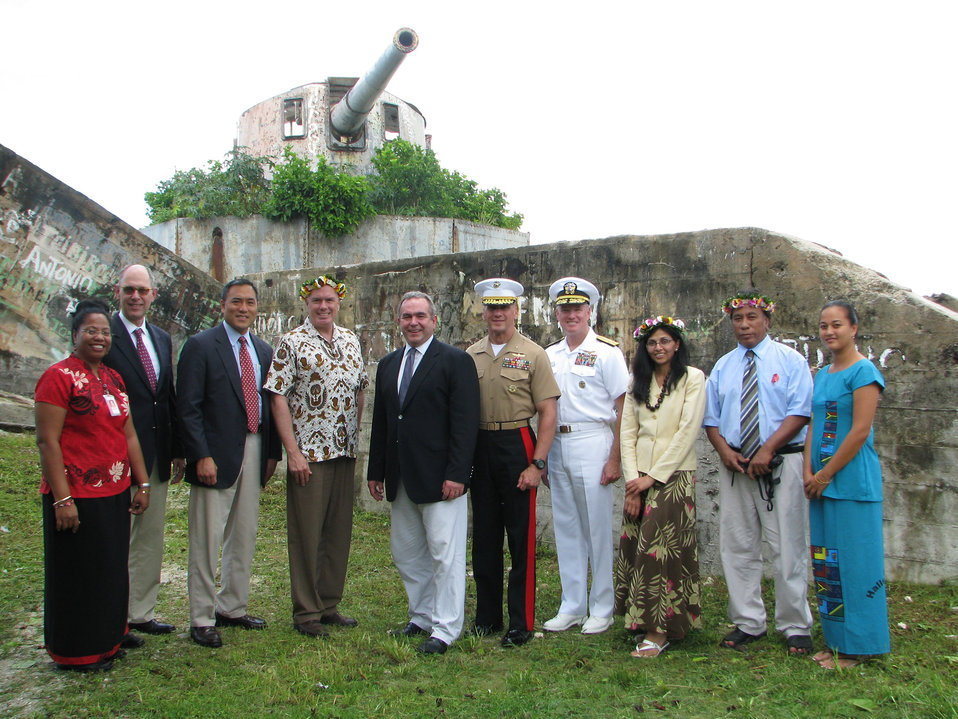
Assistant Secretary Campbell, Kiribati Foreign Secretary Lambourne, and Other Officials Pose for a Photo at the Vickers 8” Guns

Assistant Secretary for East Asian and Pacific Affairs Kurt Campbell, center, poses for a photo at the Vickers 8' coastal guns with Kiribati Foreign Secretary Tessie Lambourne, left, other local officials, and a delegation he is leading on a visit of South Pacific nations in Kiribati on June 27, 2011. The delegation includes U.S. Navy Adm. Patrick Walsh, commander of U.S. Pacific Fleet, Office of the Secretary of Defense South/Southeast Asia Principal Director, Marine Corps Brig. Gen. Richard Simcock, and U.S. Agency for International Development (USAID) Assistant Administrator Nisha Biswal, third from right. To Assistant Secretary Campbell's right is U.S. Embassy Deputy Chief of Mission Richard Pruett. Kiribati is the first stop on the trip.